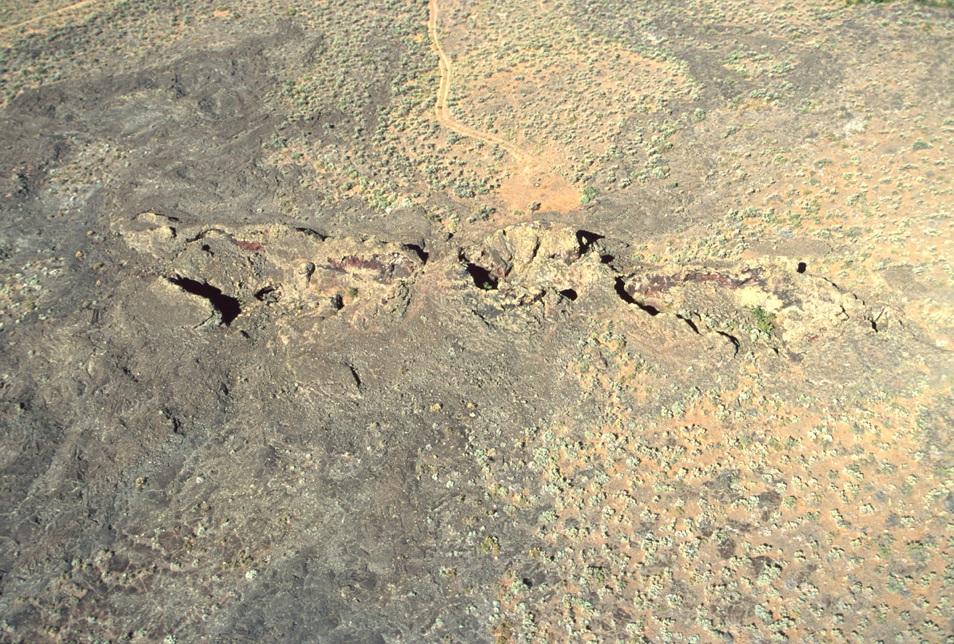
Shoshone Field Office USRD Upper Snake River District